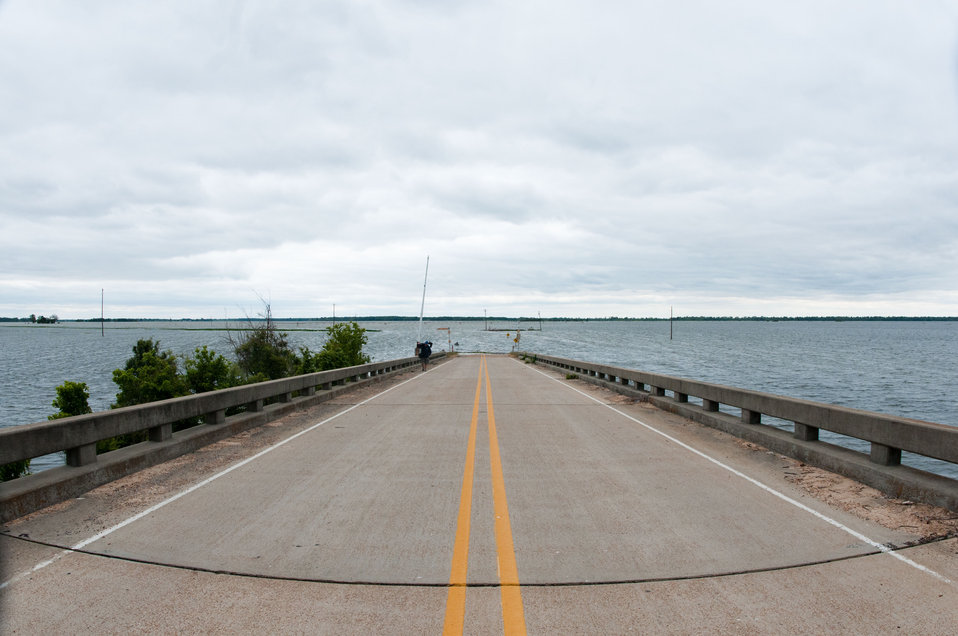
Mississippi River floodwaters have pushed into Yazoo River flooding corn and wheat fields near Yazoo City, MS, on Monday, May 16. 2011.